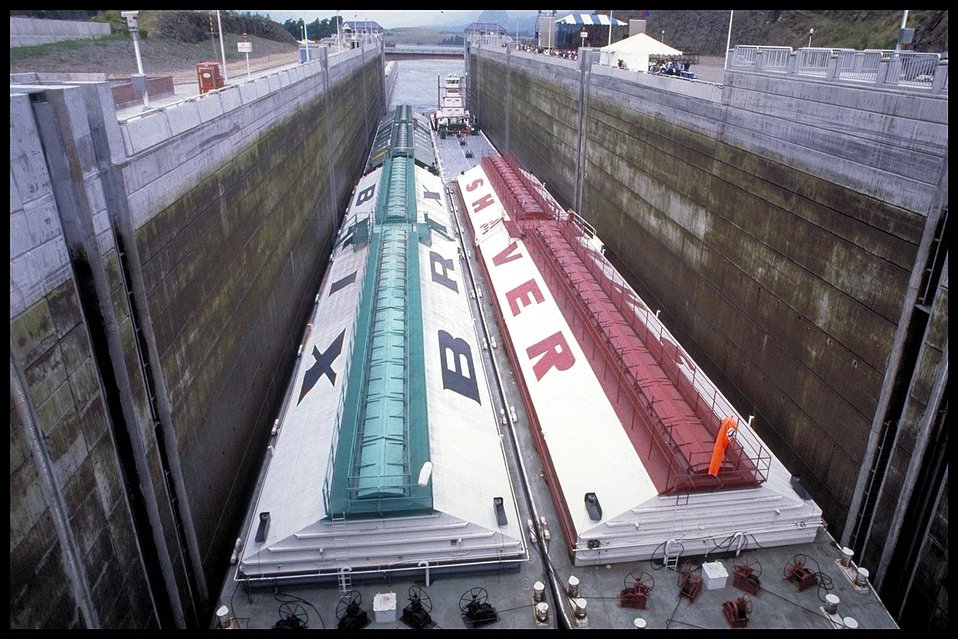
THE BONNEVILLE DAM NAVIGATION LOCK WITH BARGE PASSING THROUGH.

THE BONNEVILLE DAM, ON THE COLUMBIA RIVER, BORDERING OREGON AND WASHINGTON, IS ONE OF THE FEDERAL DAMS PROVIDING POWER TO THE PACIFIC NORTHWEST. THE BONNEVILLE POWER ADMINISTRATION IS A FEDERAL AGENCY THAT MARKETS AND DELIVERS MORE THAN HALF THE PACIFIC NORTHWEST'S ELECTRICITY AND MAINTAINS A NETWORK OF MORE THAN 12,300 MILES OF TRANSMISSION LINES.